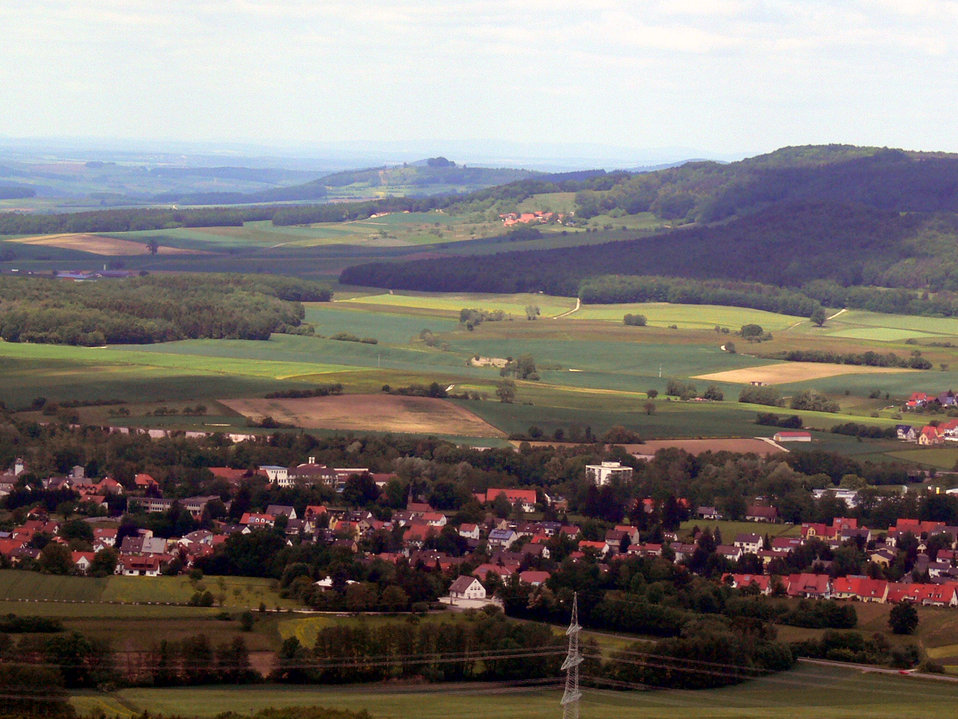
037 Scheßlitz, Veitsberg